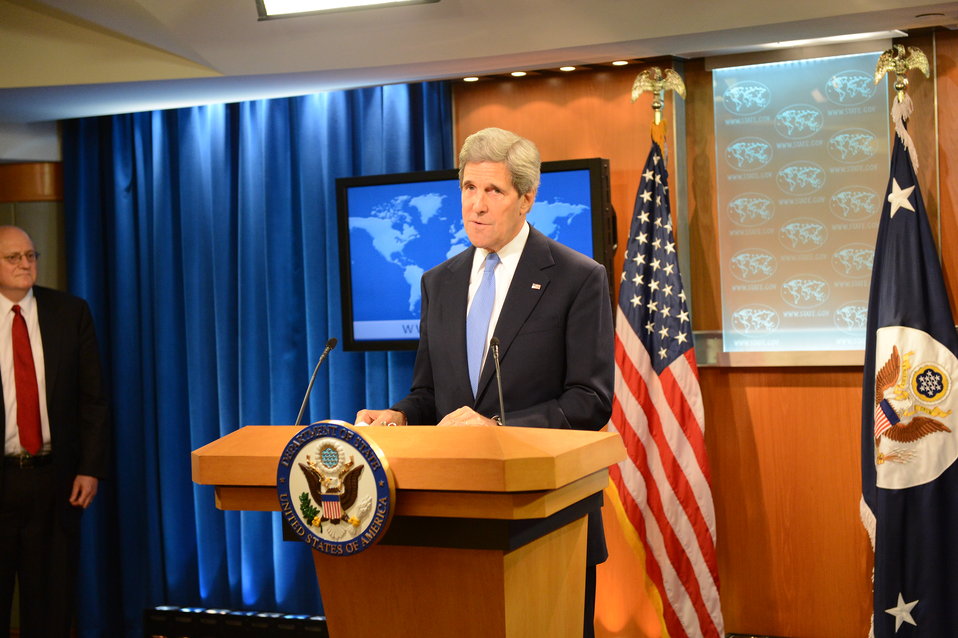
Secretary Kerry Releases the 2012 International Religious Freedom Report

U.S. Secretary of State John Kerry releases the 2012 International Religious Freedom Report at the U.S. Department of State in Washington, D.C., on May 20, 2013.